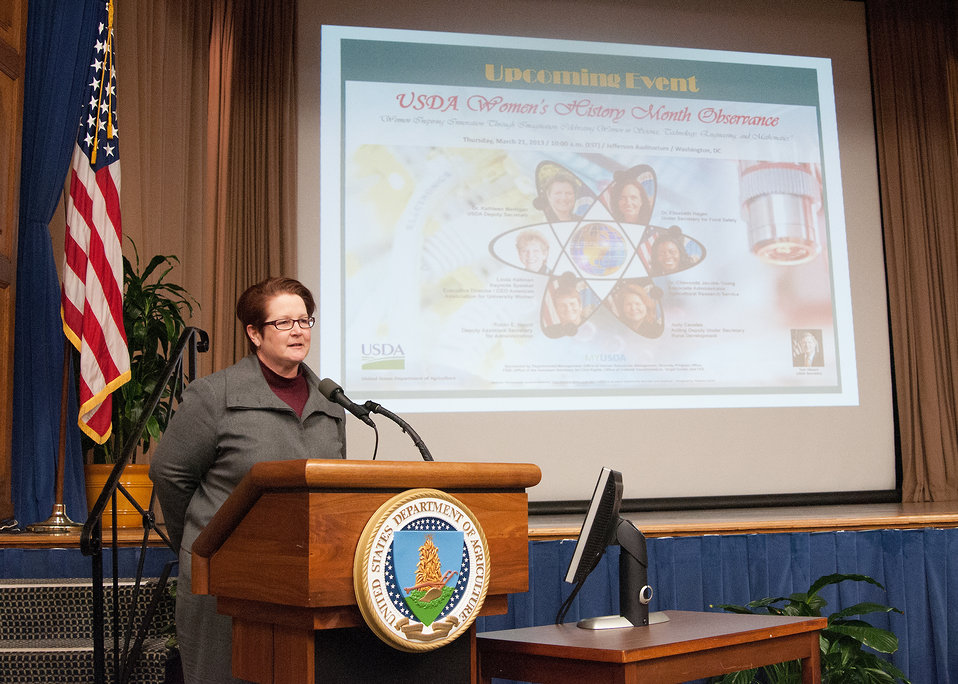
U.S. Department of Agriculture (USDA) Office of Human Resources Management Deputy Director Roberta Jeanquart offers closing remarks at the First Annual All Hands Special Emphasis Program Managers (SEPM) Meeting at the U.S. Department of Agriculture Jefferson Auditorium in Washington, D.C. on Wednesday, Mar. 13, 2013.